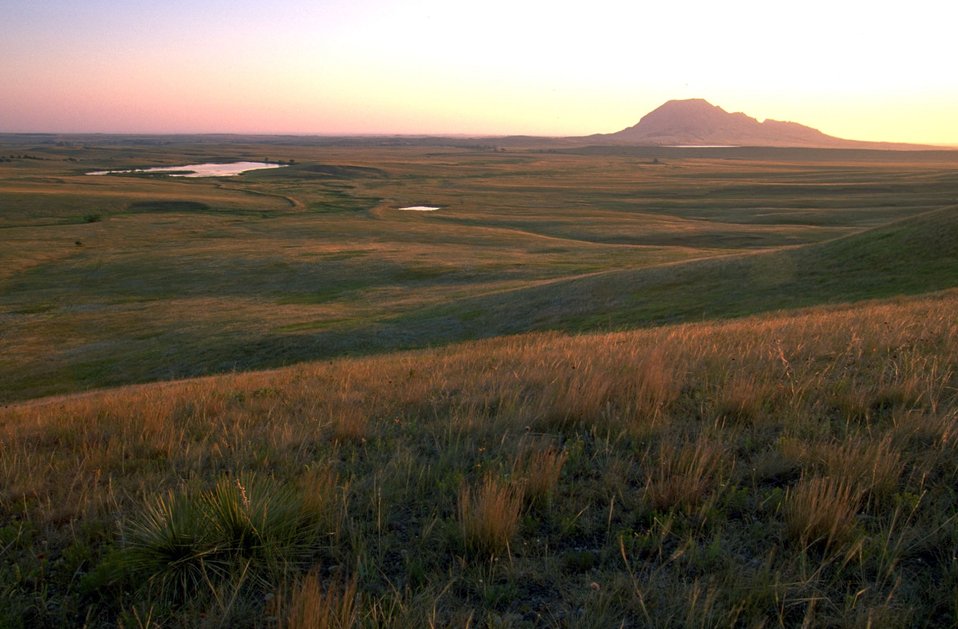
Prairie vista with Fort Meade Reservoir and Bear Butte in the background